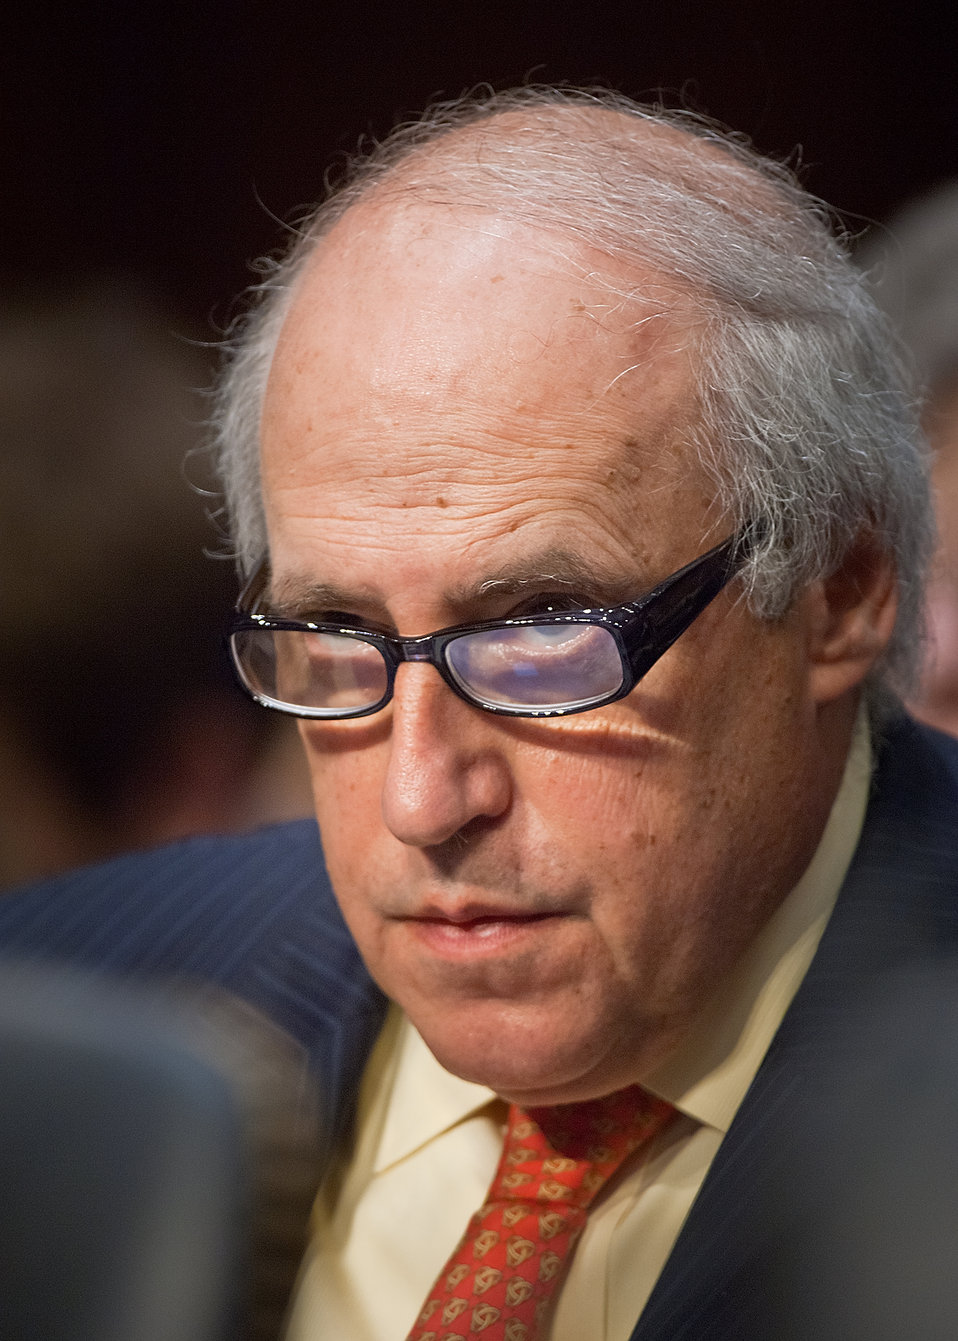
Former Secretary Dan Glickman, Co-Chair of the Chicago Council’s Global Agricultural Development Initiative and Senior Fellow, Bipartisan Policy Center, Washington, DC attended a hearing of the Senate Committee on Agriculture, Nutrition and Forestry, in Washington, DC, Thursday, May 26, 2011. Secretary Glickman was a member of the witness panel to speak after Secretary Vilsack. The second panel included a farmer and members of marketing, research and academics who discussed the future of American agriculture.